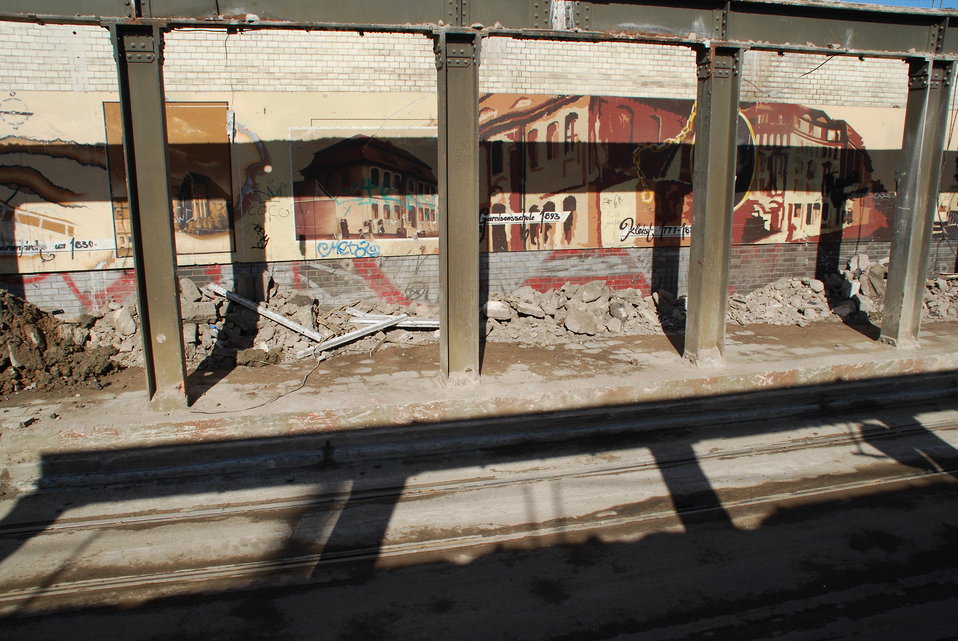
Abriss Bahnhofstunnel Frankfurt (Oder)